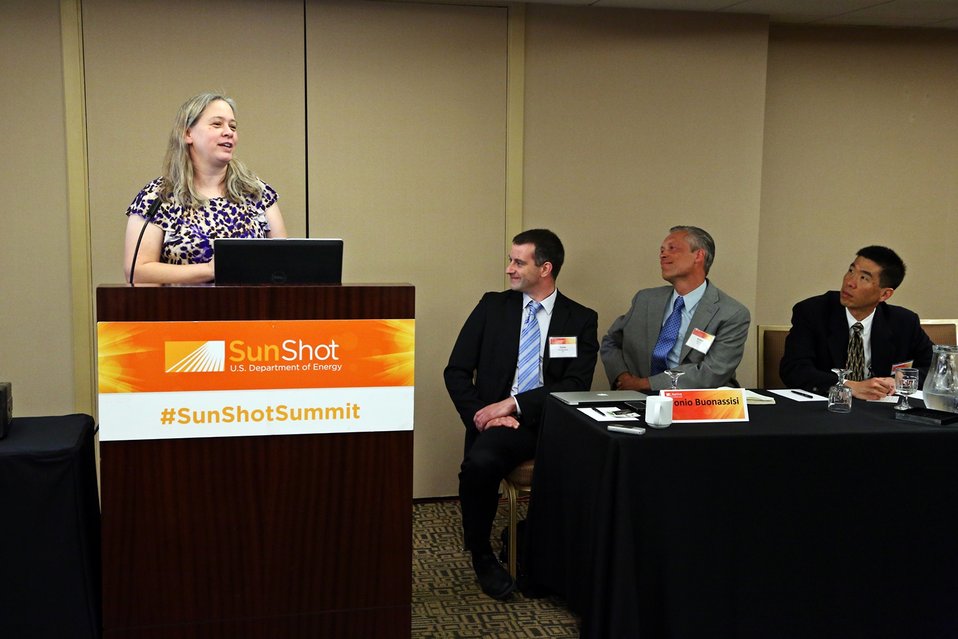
Breakout Sessions 16